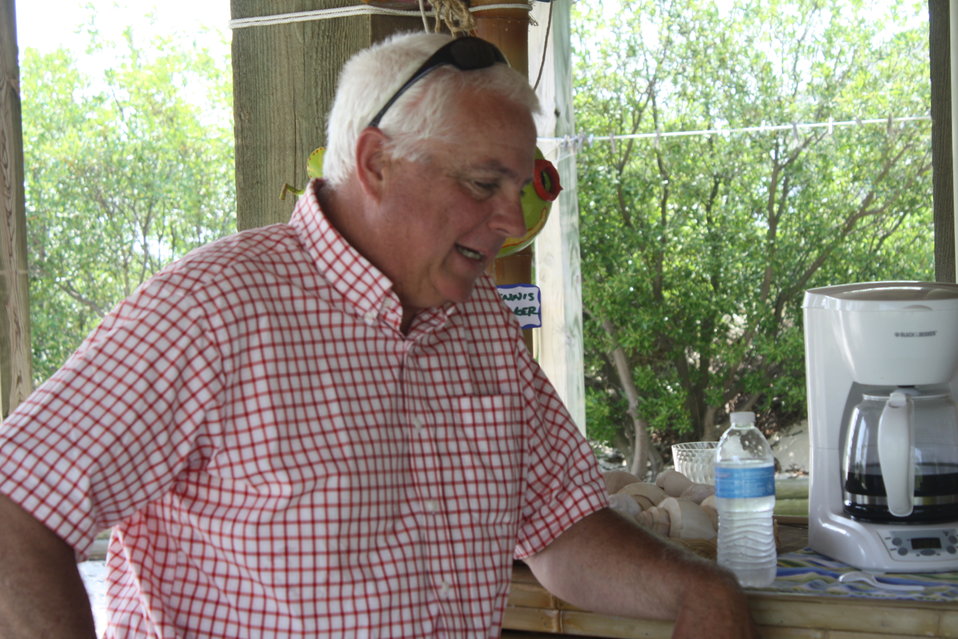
Bavon Beach project

Scott Hardaway with the Virginia Institute of Marine Science spoke about the institute's shoreline analysis and recommendation for the use of offshore breakwaters to stabilize the beach.